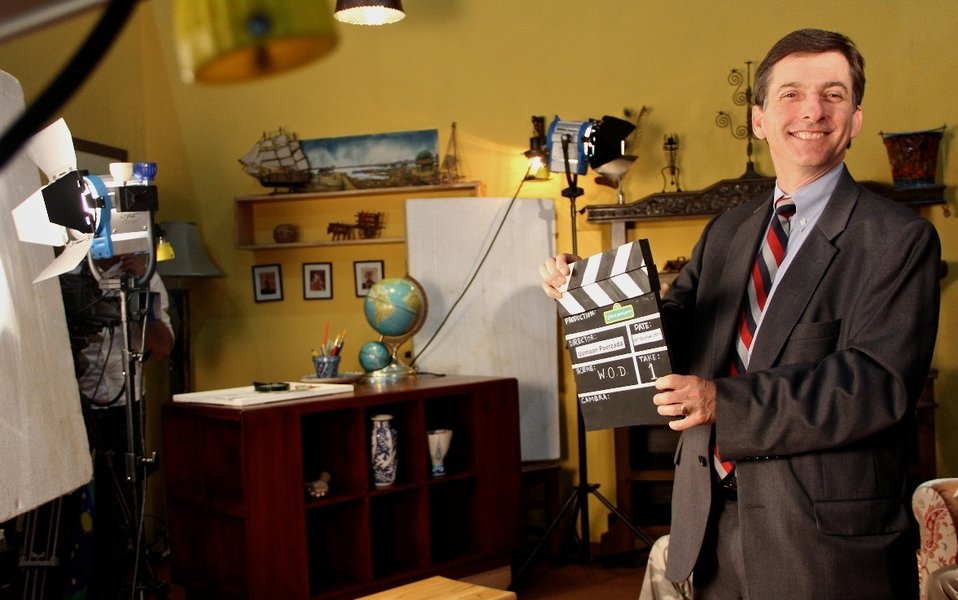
Mr. Andrew Sisson, Director USAID Mission visits the Sim Sim Hamara studios

Camera-Take -Action